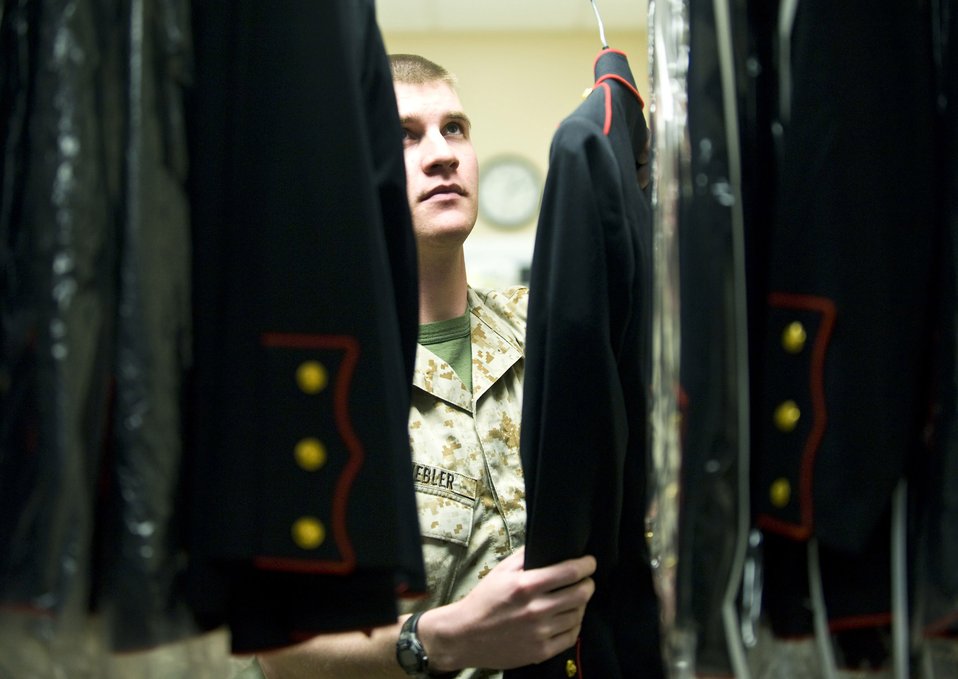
Air Force Mortuary Affairs Operations Center

U.S. Marine Lance Corporal Adam Knebler, Marine liaison for uniforms section, hangs Marine service dress uniforms into inventory. The uniform section of the Charles C. Carson Center for Mortuary Affairs, Dover Air Force Base, Del., prepares uniforms for remains and works with military escorts for the dignified transfer of remains process.